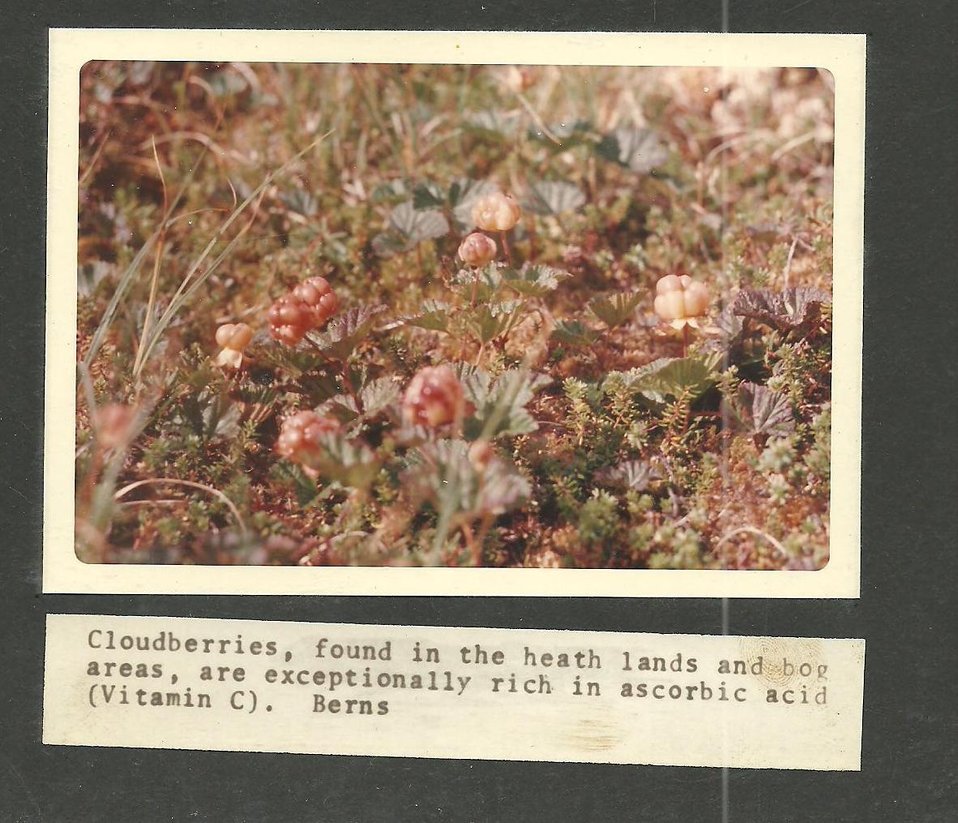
(1971) Cloudberries

Credit: USFWS

Source and Contact: Kodiak National Wildlife Refuge